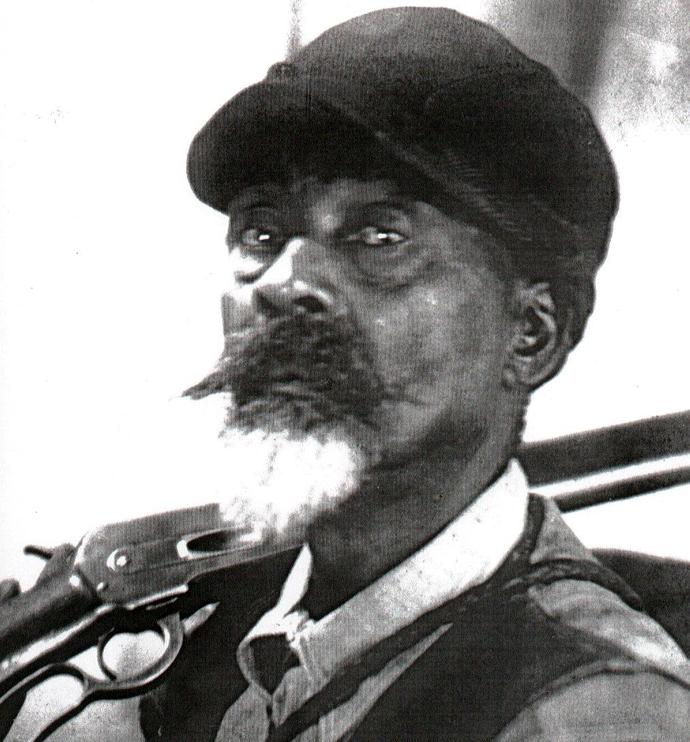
Holt Collier

A former slave and renowned hunter, a refuge in Mississippi was named in his honor. The refuge is located on Collier's historic hunting grounds near Darlove, Mississippi.